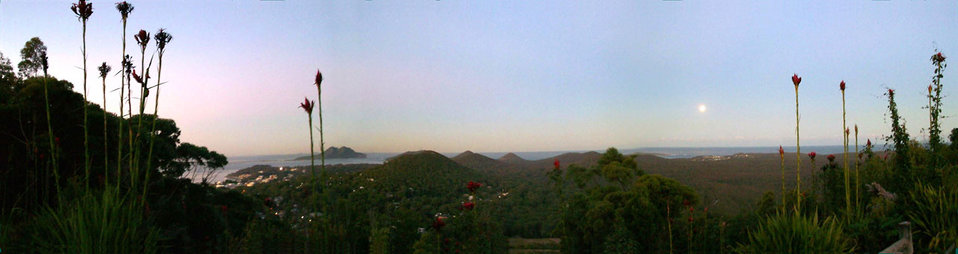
Moonscape

Dusk at lookout at port stephens, australia.